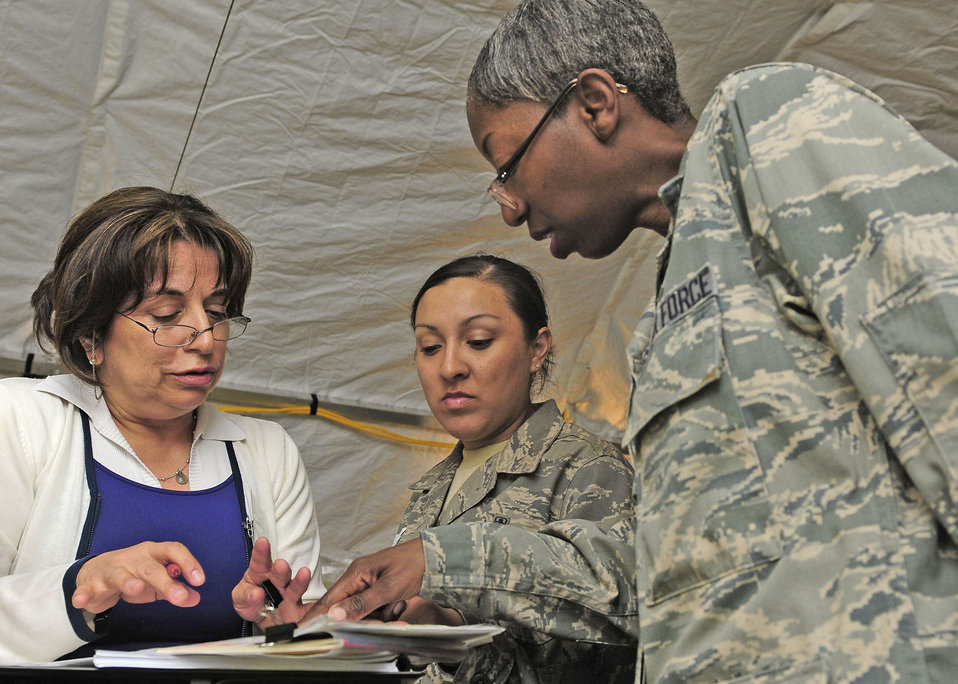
Bridging the language gap

Senior Airman Cassondra Johnson (center) translates a conversation between a Chilean nurse and Maj. Sharon Walker March 17, 2010, in Angol, Chile. Airman Johnson is a aerospace medical technician assigned to the 81st Aerospace Medical Squadron at Keesler Air Force Base, Miss. Major Walker is the chief nurse of expeditionary hospital here and is deployed from Keesler Air Force Base, Miss.